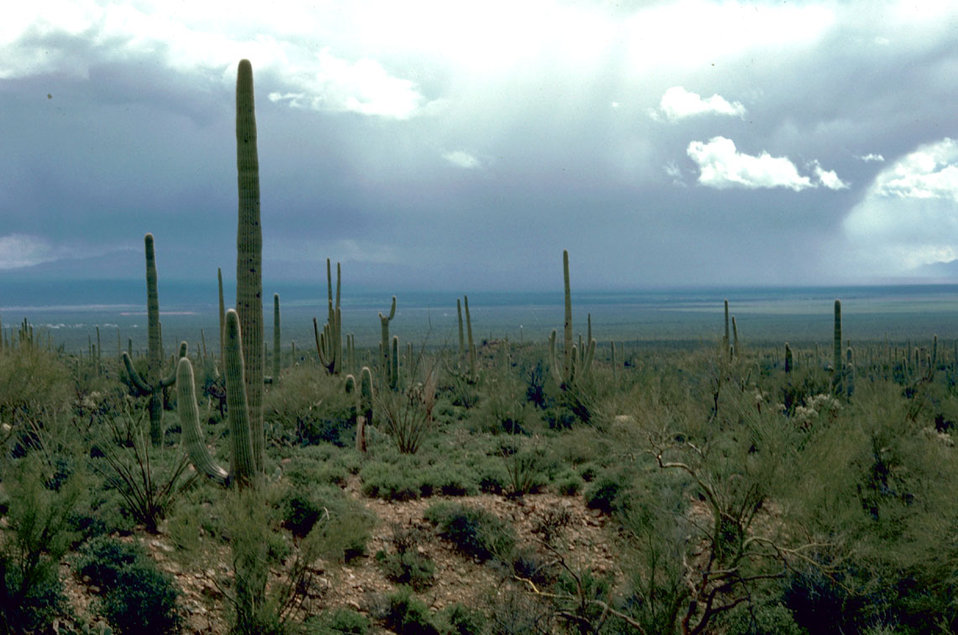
Saguaro Cactus